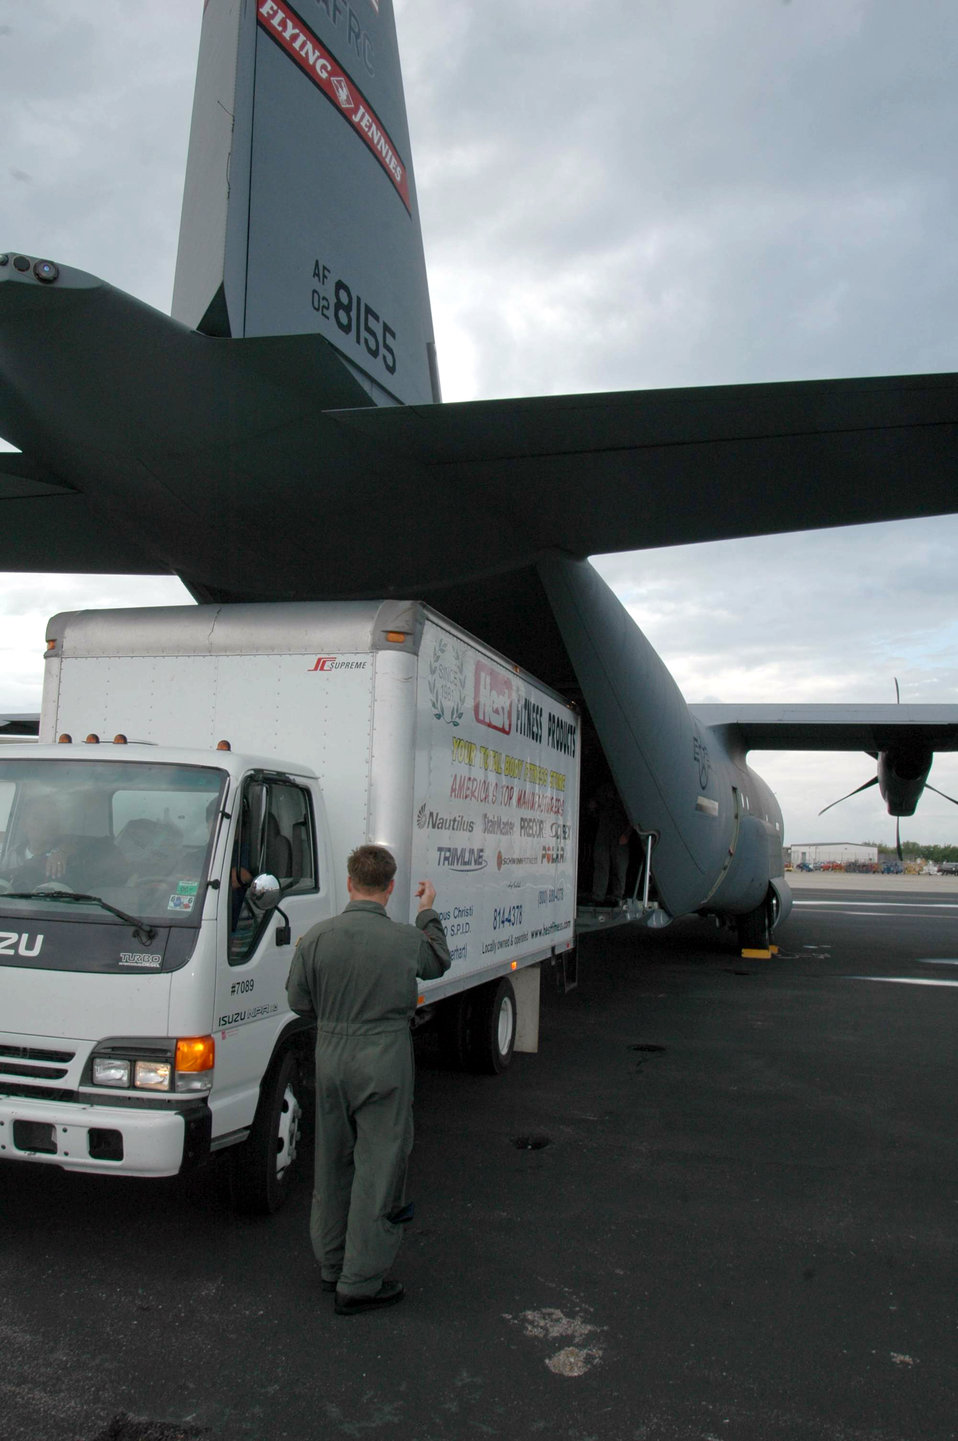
Reservists airlift dolphin to Florida

CORPUS CHRISTI, Texas -- Senior Master Sgt. Todd Patterson guides a truck carrying Noah, a rescued dolphin, under the tail of a C-130J Hercules used to transport him to Florida. Sergeant Patterson is a loadmaster with the 815th Airlift Squadron at Keesler Air Force Base, Miss.